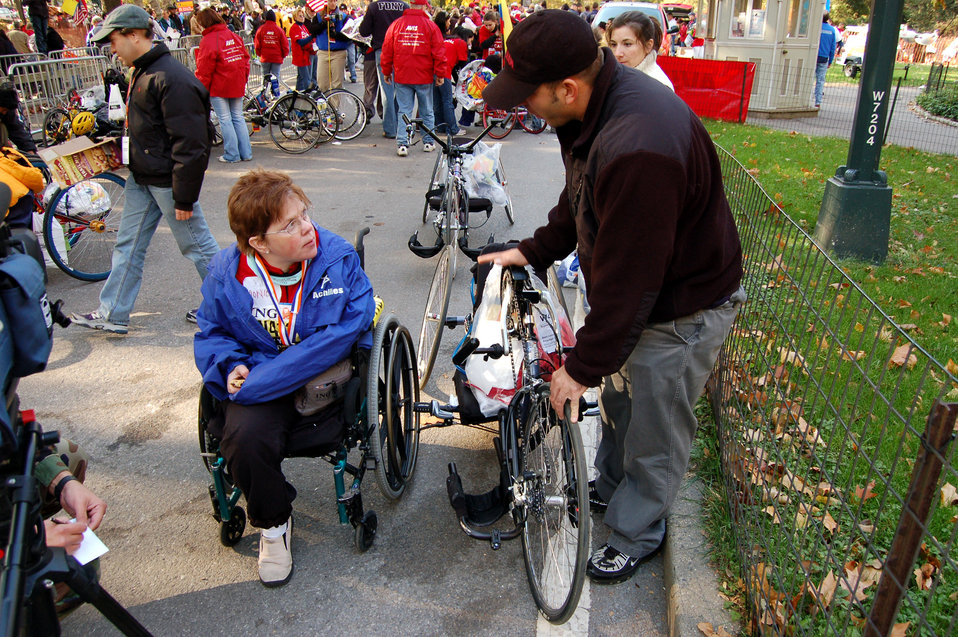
Achilles Freedom Team 'wounded warrior' Monica Szymanski gets help with her hand-crank cycle from New York Fire Department volunteers after she completed the New York City Marathon Nov. 5. The former Reserve senior airman, who lost her leg due to cancer, joined nearly 50 disabled veterans for the marathon.